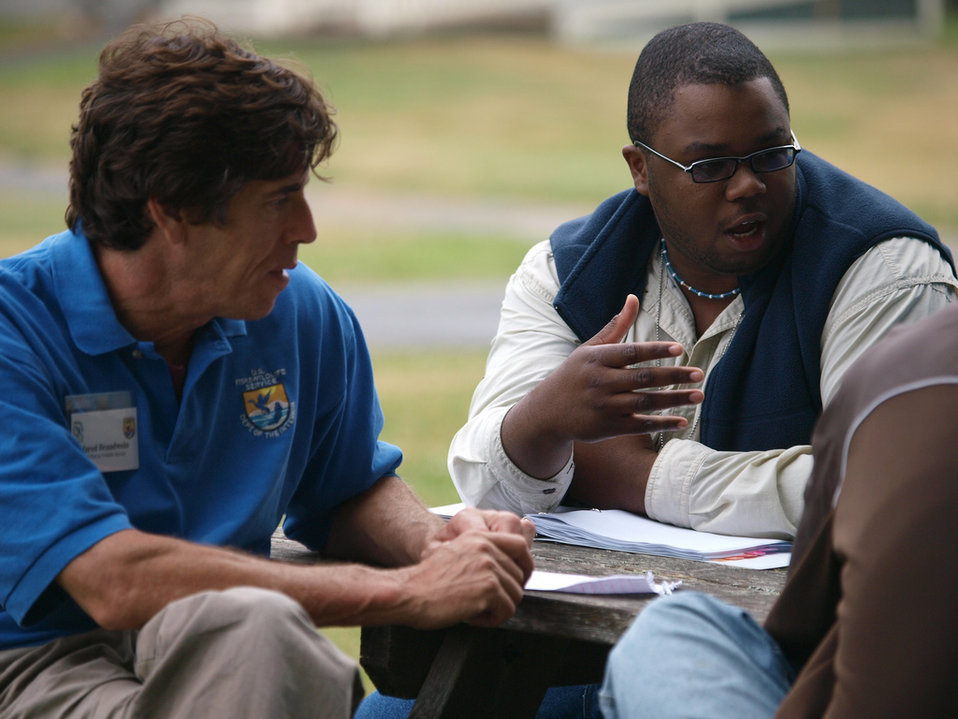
Debating conservation ethics

U.S. Fish and Wildlife Service